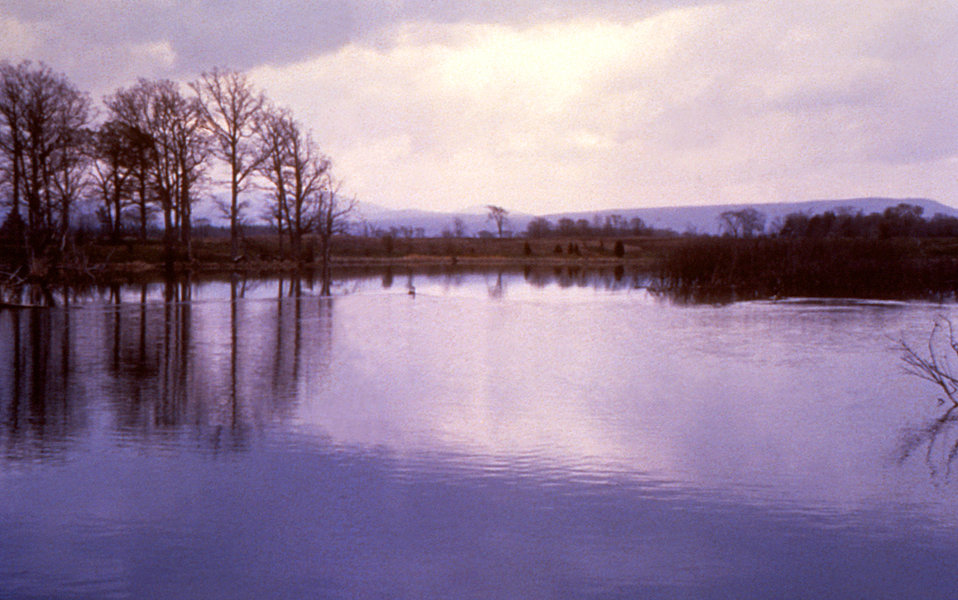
These were the waters from which many muskrats were trapped, infecting a number of Vermont trappers with tularemia during 1969.